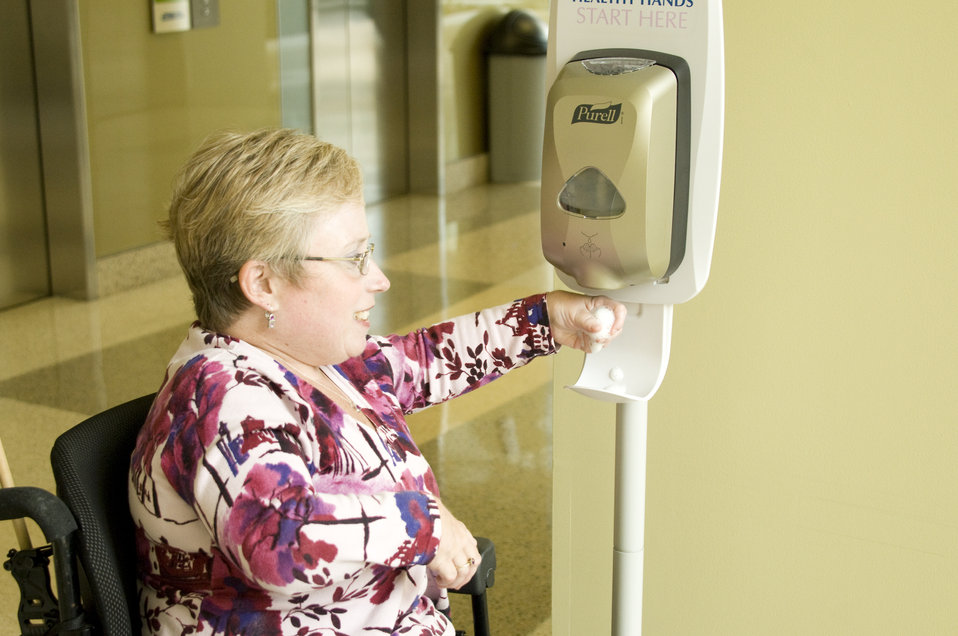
Before leaving one of the Centers for Disease Control's (CDC) Atlanta, Georgia-based facilities, this woman seated in her wheelchair, had paused for just a moment to obtain some hand-sanitizer from an automatic dispenser. Note the height at which the dispenser was situated, making accessibility to its contents quite easy for any interested passersby.